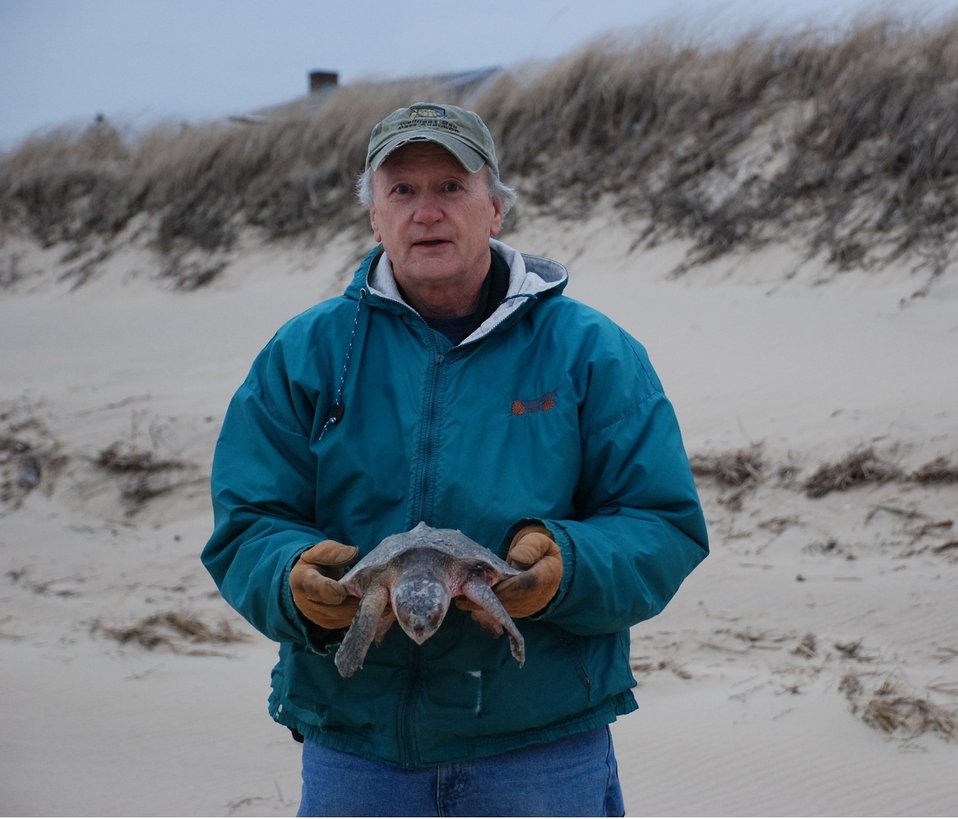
Bill and a Kemp Ridley's

This is Wellfleet Bay volunteer, Bill Allan, rescuing a small Kemp Ridley's.